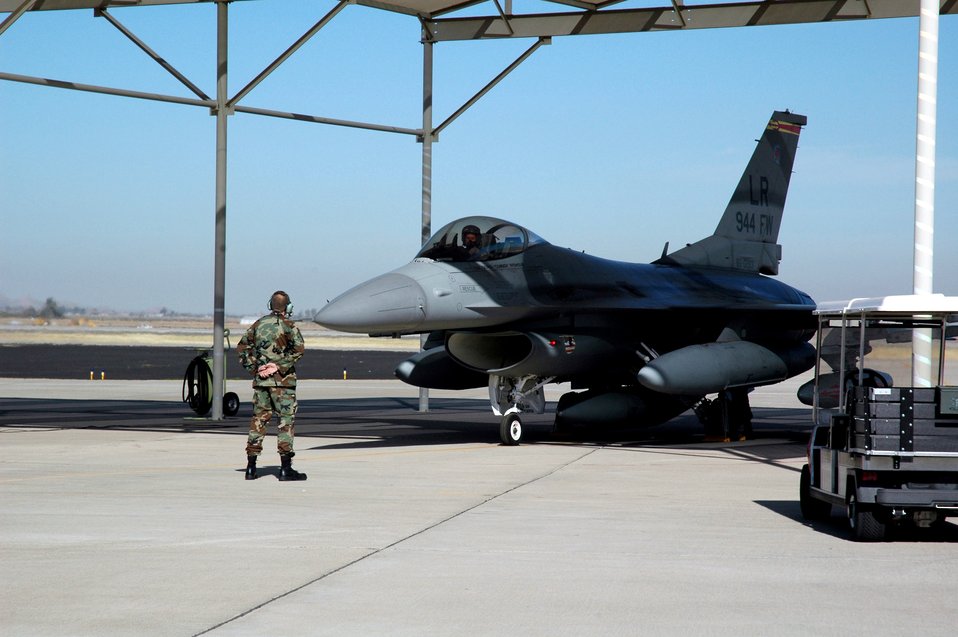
Reserve wing closes chapter in history

Master Sgt. Bob Rydzynski marshals an F-16 Fighting Falcon for its historic last flight Feb. 12 from Luke Air Force Base, Ariz. The last three F-16s assigned to the 944th Fighter Wing departed Luke as part of Base Realignment and Closure Commission actions. Sergeant Rydzynski is a crew chief at the 944th Aircraft Maintenance Squadron.